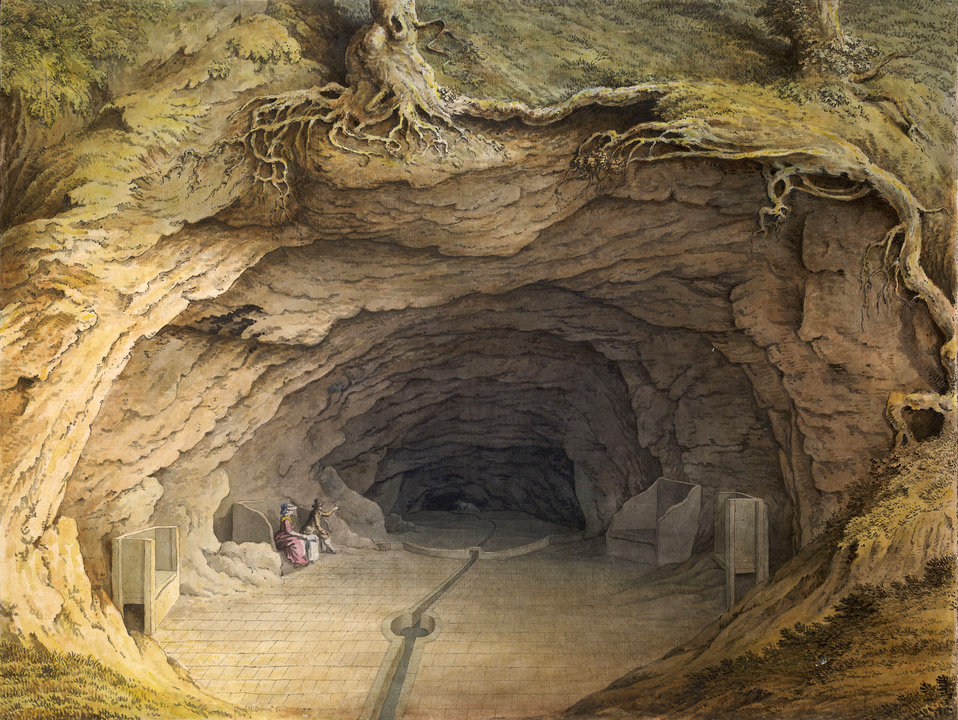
''Mother Ludlene's Hole'' in Moor Park by Samuel Hieronymus Grimm 1790